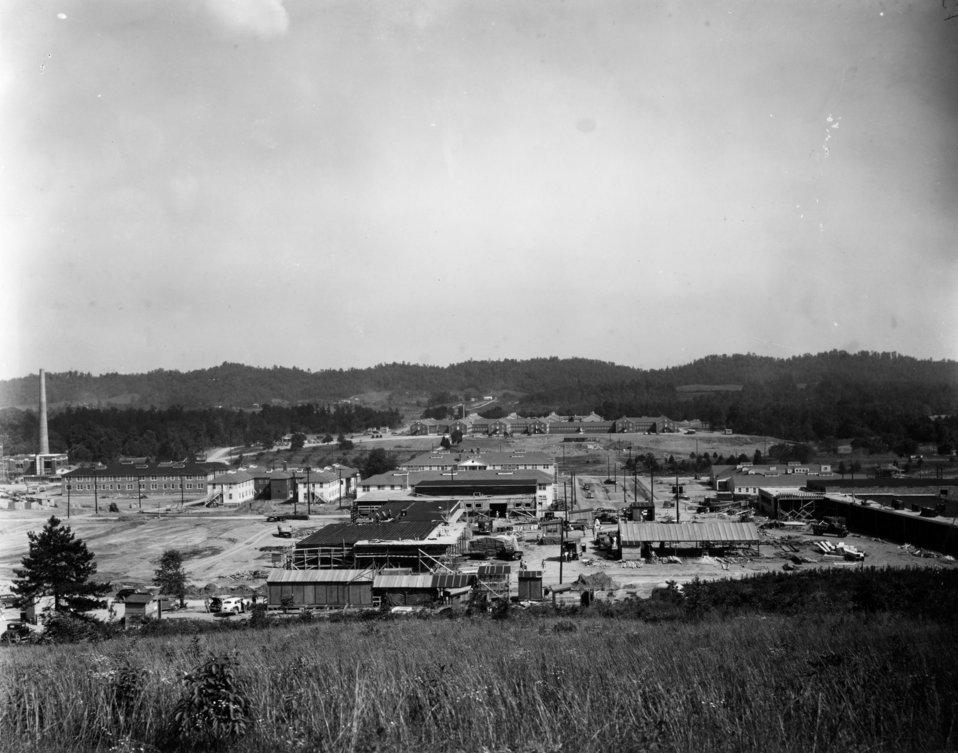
Construction activity at Oak Ridge